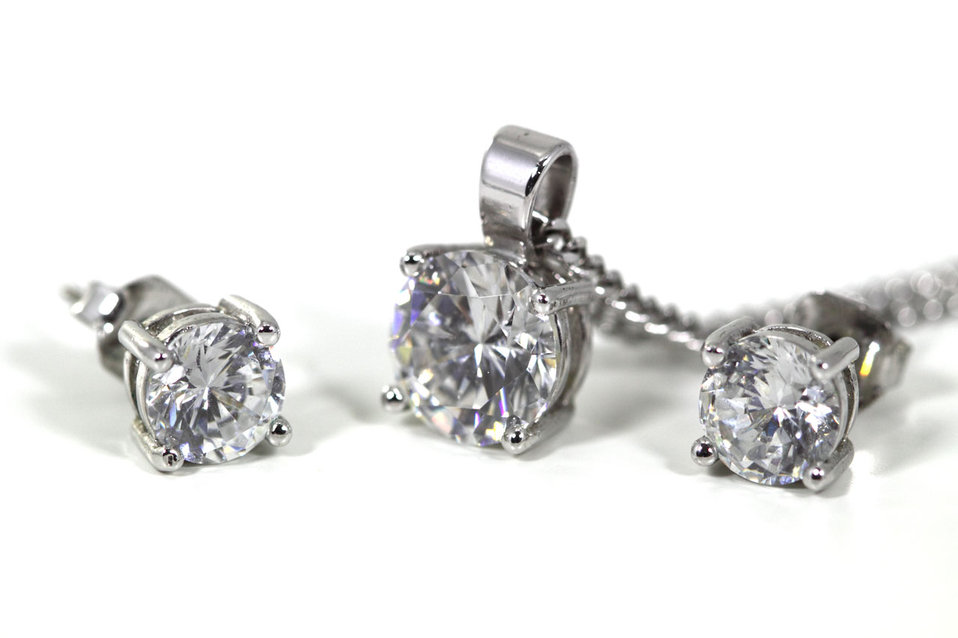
Jewellery

Silver earrings and a necklace.